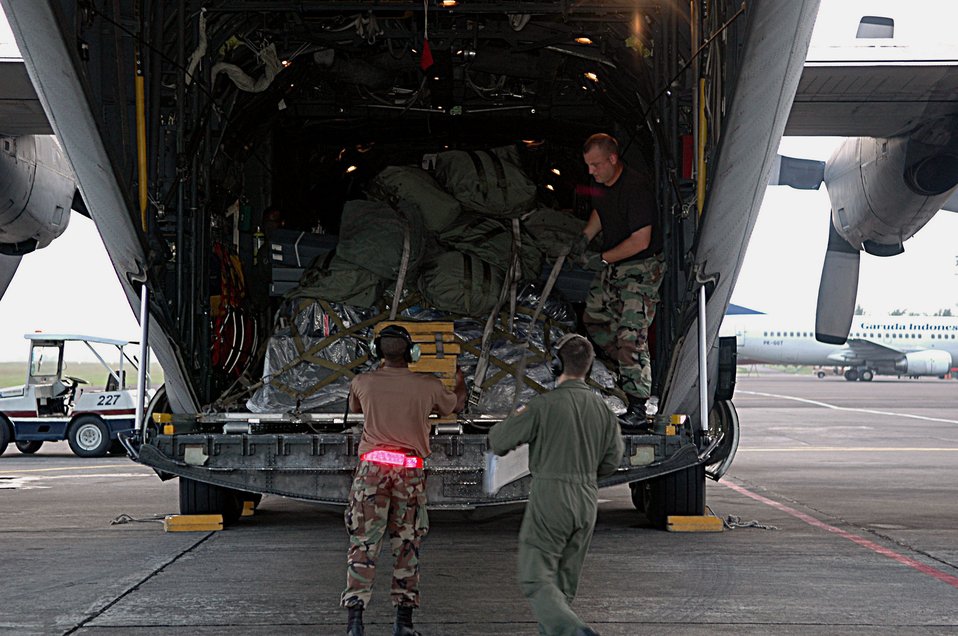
Earthquake relief

Airmen from Yokota Air Base, Japan, unload supplies and equipment at Yogyakarta, Indonesia, on Thursday, June 1, 2006. The C-130 Hercules mission brought humanitarian relief to Indonesia after an earthquake claimed the lives of more than 6,200 people and injured thousands more.